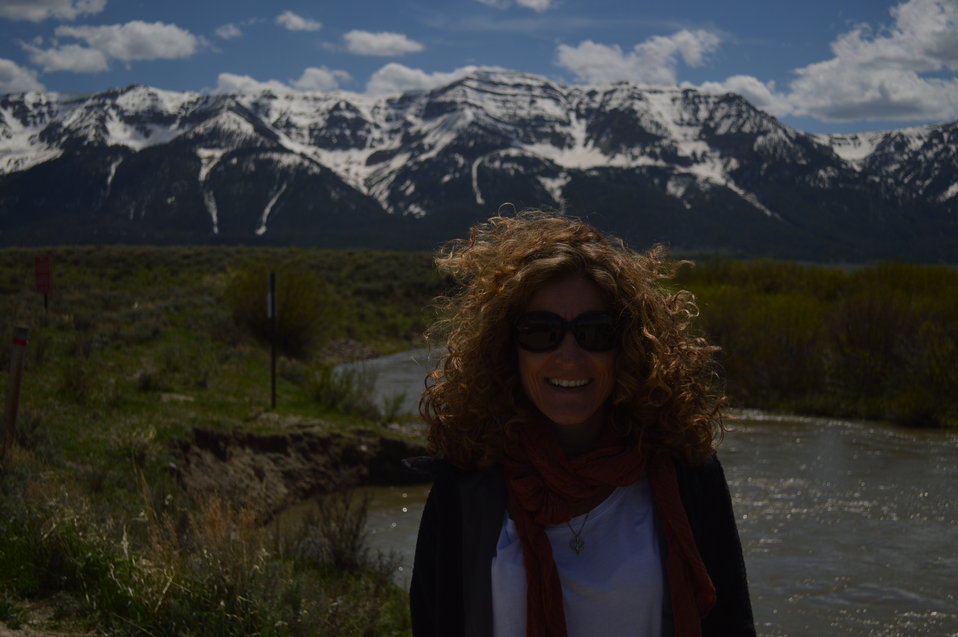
Regional Leadership Visit to Montana 2014